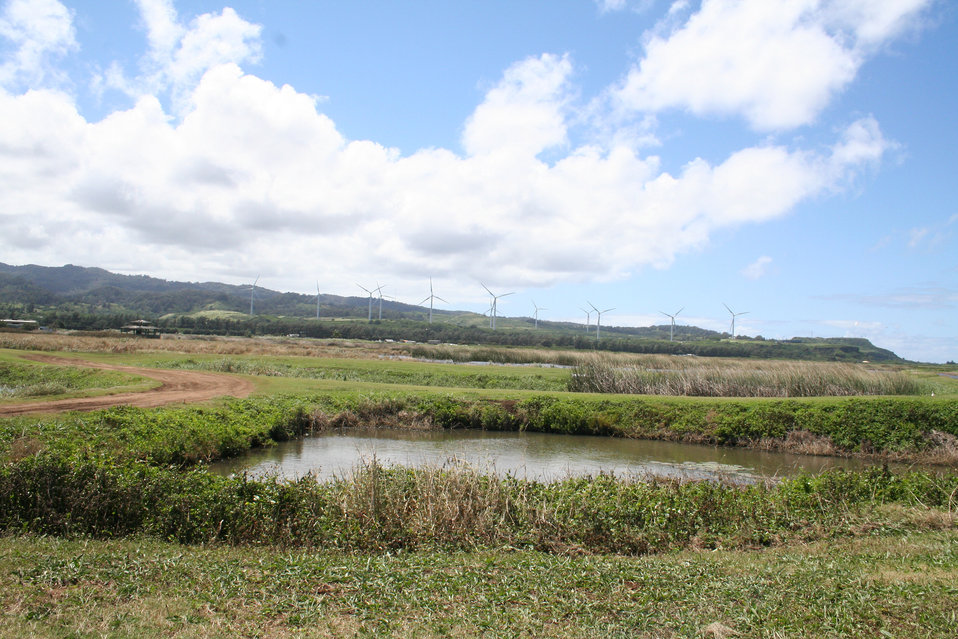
James Campbell NWR wetlands with wind facility in the background.